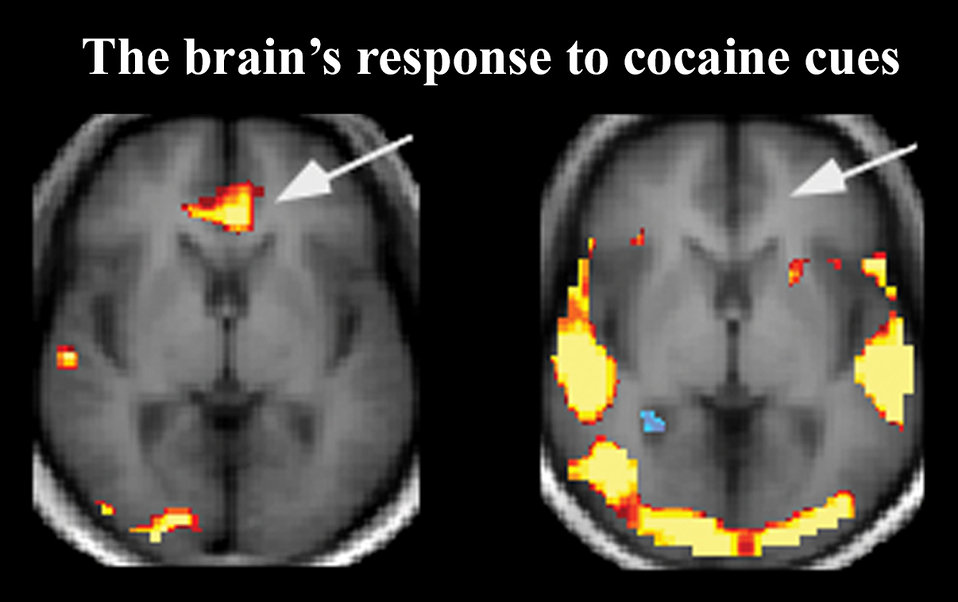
The brain's response to cocaine cues